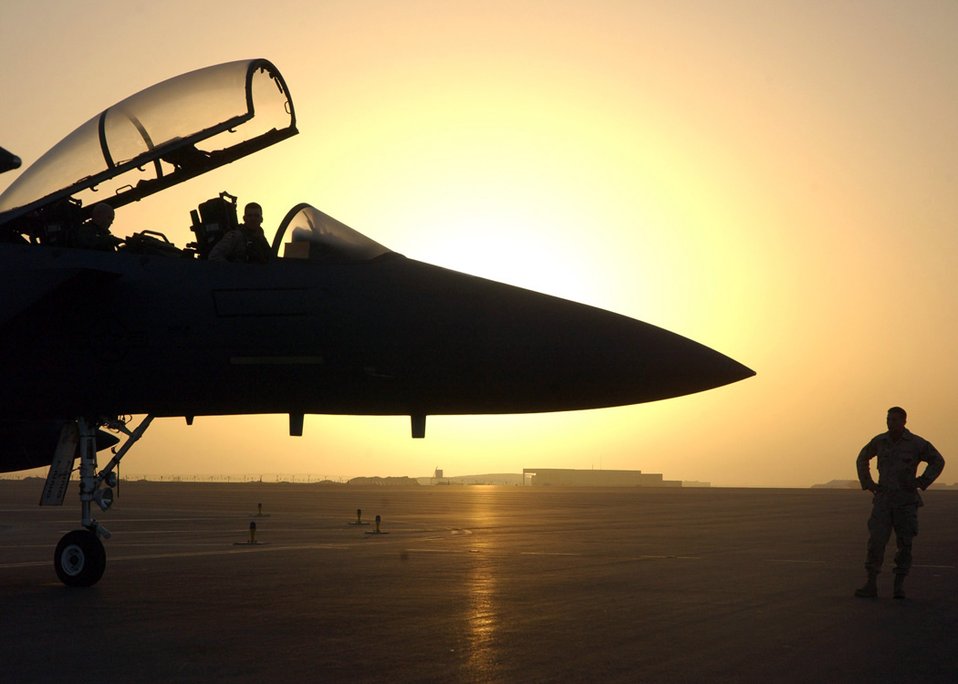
Deployed fighters

SOUTHWEST ASIA (AFPN) -- An F-15E Strike Eagle is silhouetted against the sunrise at a deployed location here. The pilot and aircraft were assigned to the 492nd Expeditionary Fighter Squadron. The unit returned to its home station at Royal Air Force Lakenheath, England, Jan. 25.